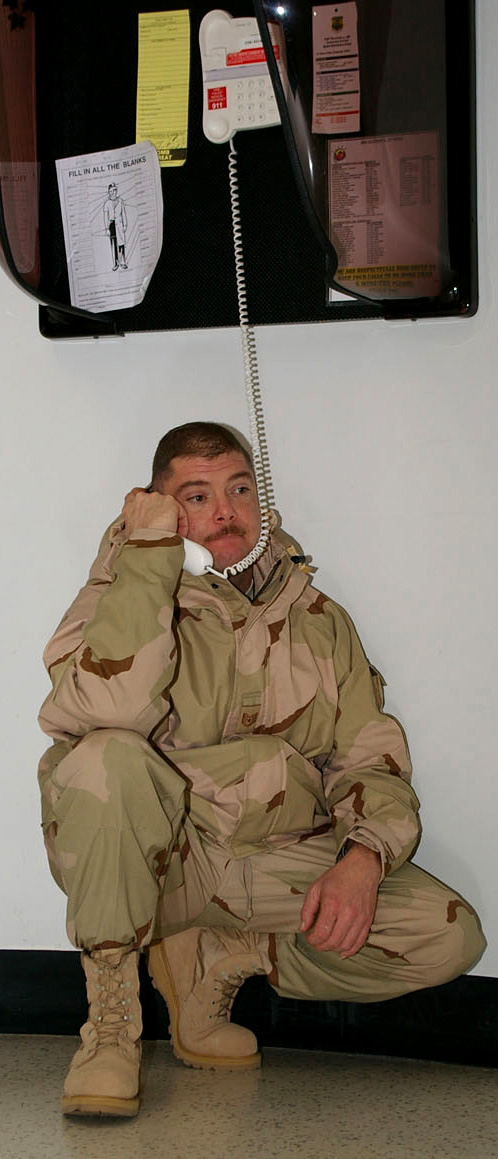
Airmen depart Mildenhall for Southwest Asia

Tech. Sgt. Kevin Crumley says goodbye to his family before setting off on a 120-day deployment to Southwest Asia Jan. 23 at Royal Air Force Mildenhall, England. Sergeant Crumley is assigned to the 100th Civil Engineer Squadron.